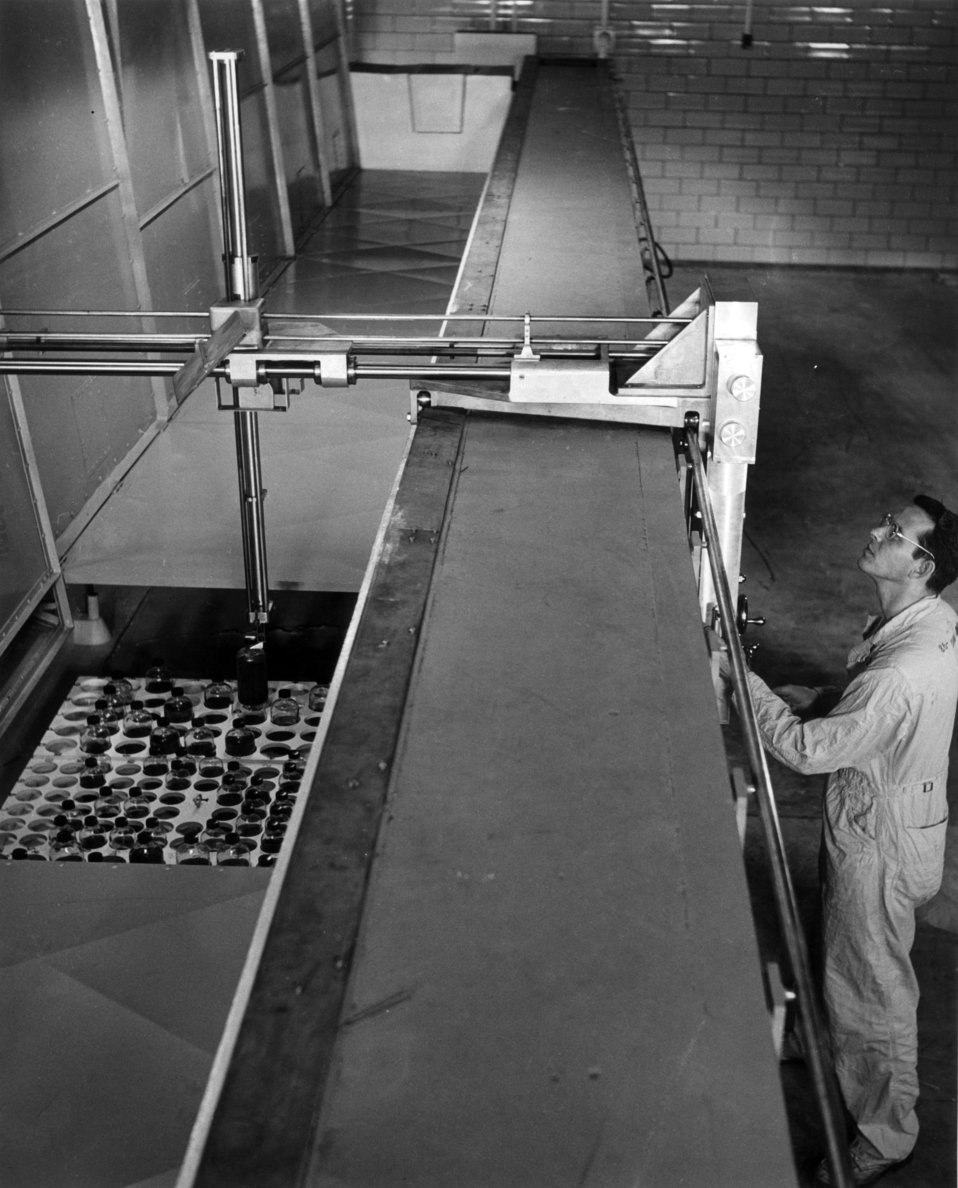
Isotope Packing Storage and Shipping ORNL

5786-17-12 DOE photo Ed Westcott
1950 Oak Ridge Tennessee